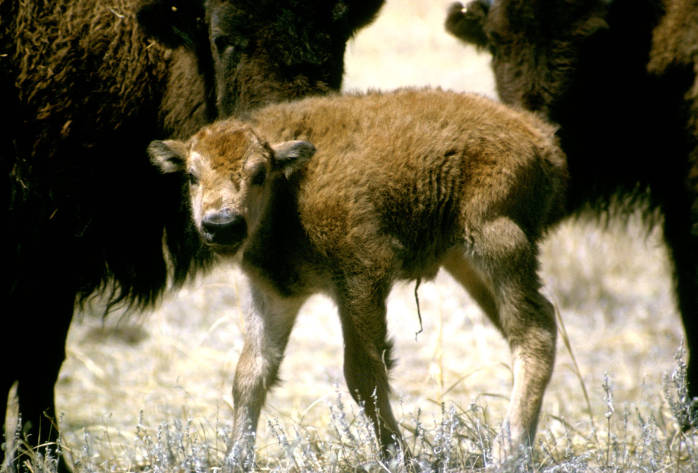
bison calf